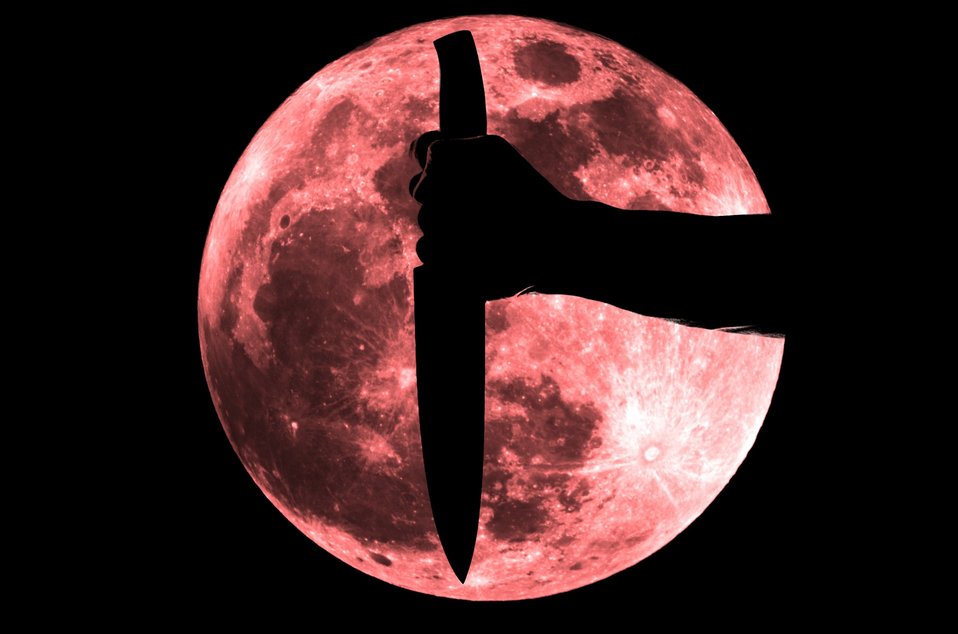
Horror silhouette of a hand and knives on the red moon.